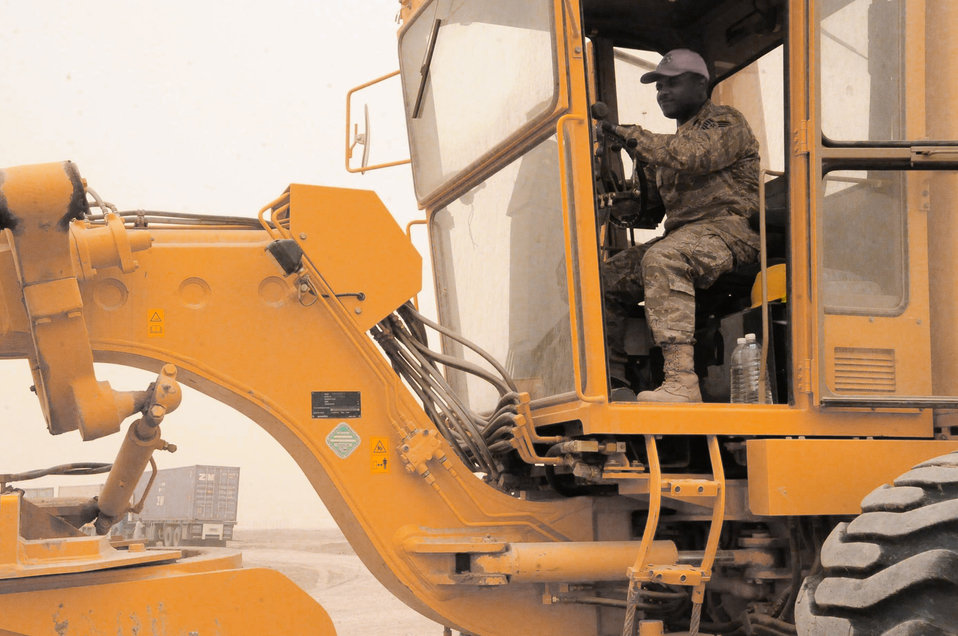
RED HORSE is back in Iraq

Tech. Sgt. Thomas Davidson, 557th Expeditionary RED HORSE Squadron, Ali Base, Iraq, operates a road grader May 14, 2010. Sergeant Davidson, deployed from Camp Perry ANG, Ohio, was part of the first RED HORSE squadron in Iraq and is a member of the last RED HORSE squadron to leave Iraq.